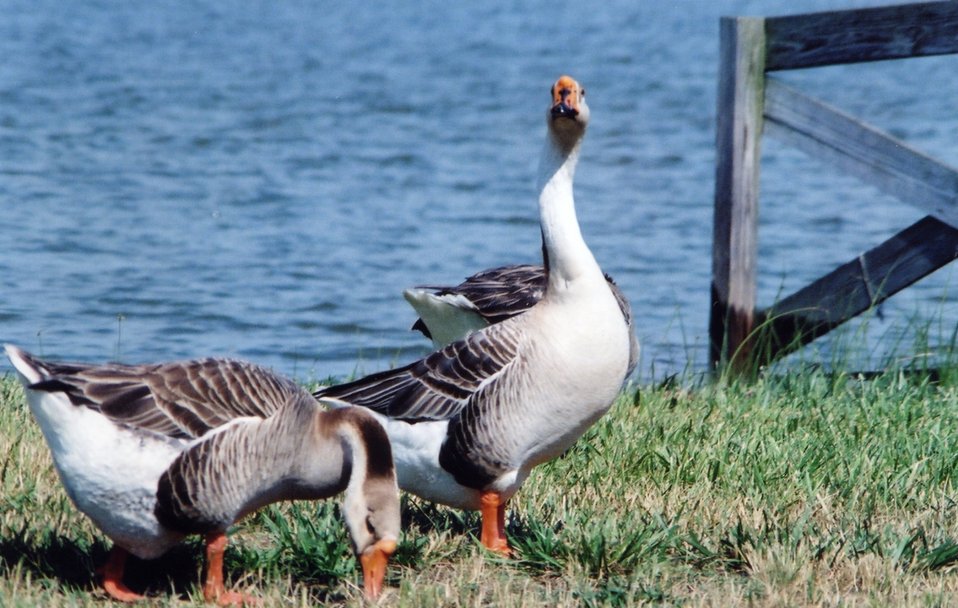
Non-native Chinese geese along the Patuxent River.